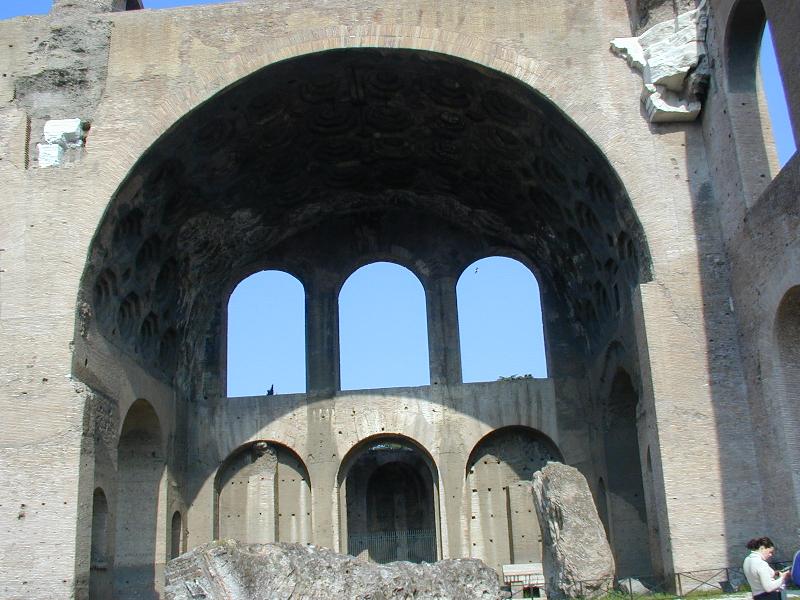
010218 Massenzio 02